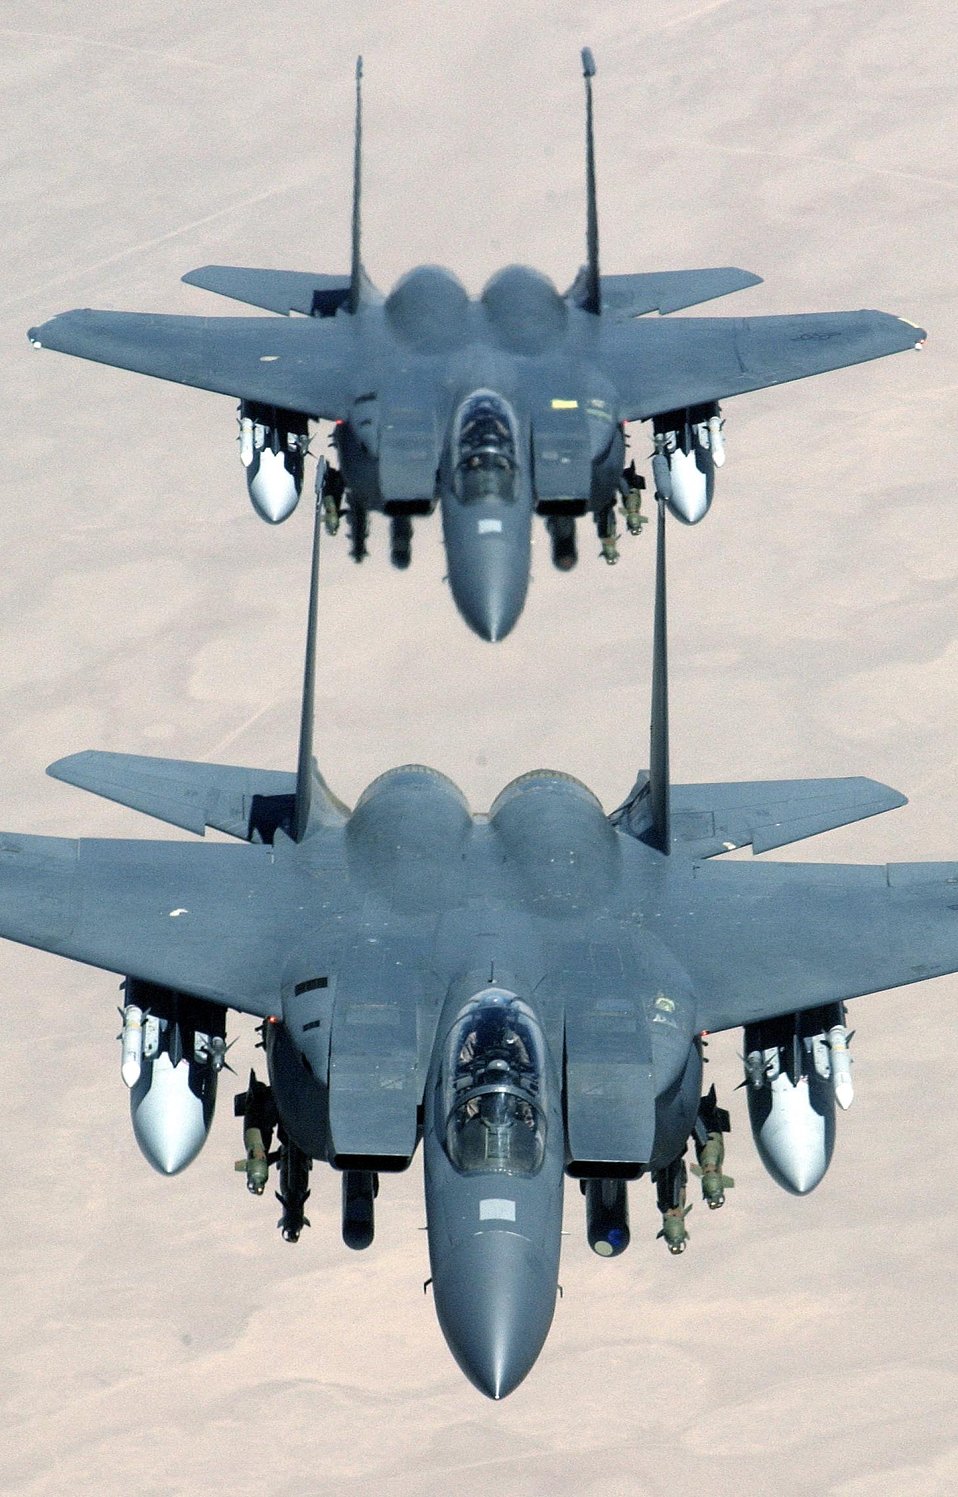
Fly like an eagle

BALAD AIR BASE, Iraq - F-15E Strike Eagles deployed from the 492nd Fighter Squadron, Royal Air Force Lakenheath, England, fly a combat sortie in support of Operation Iraqi Freedom here May 6.